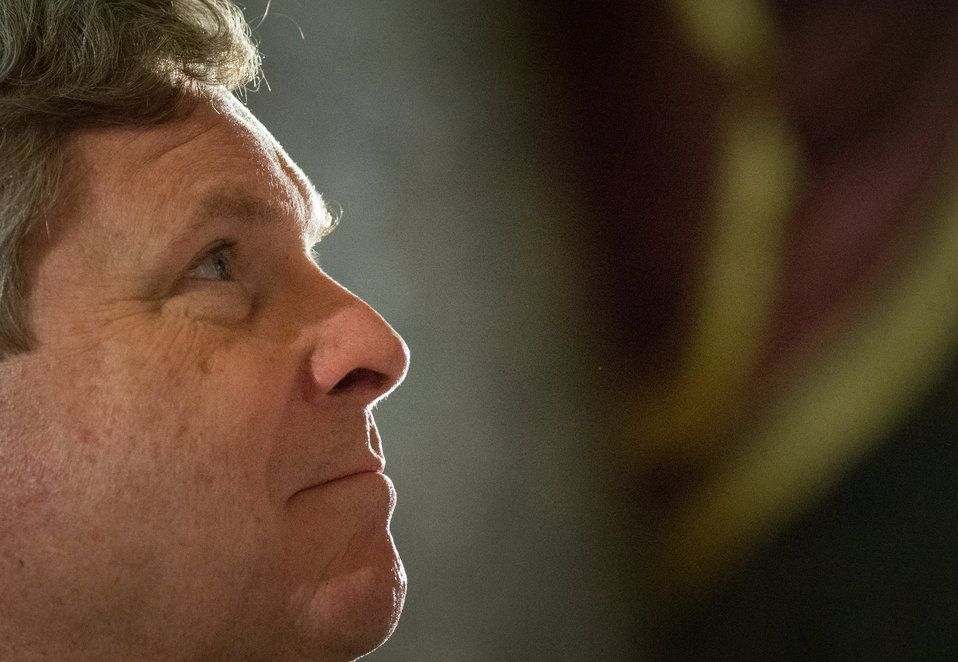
Agriculture Secretary Tom Vilsack looks up at the Dr. Norman E. Borlaug statue after it's unveiling in the National Statuary Hall at the U. S. Capitol in Washington, D.C. on Tuesday, Mar. 25, 2014.